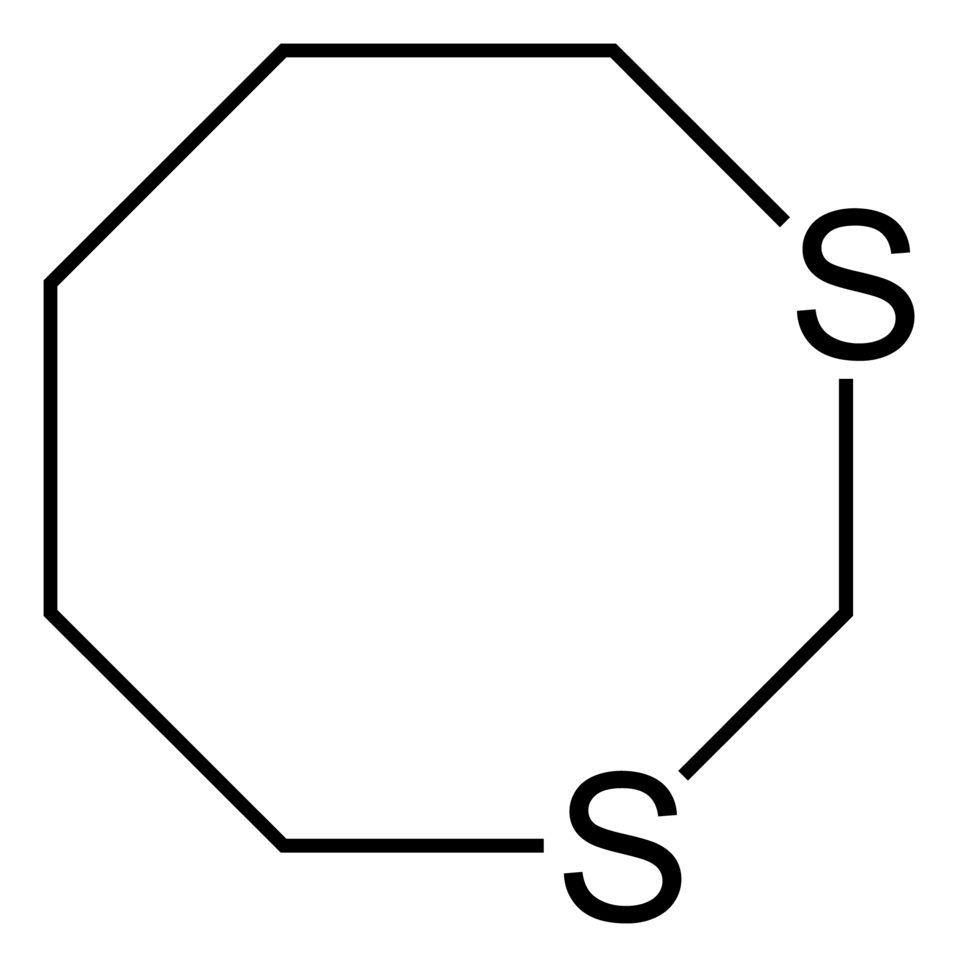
Skeletal formula of the 1,3-dithiocane molecule, C6H12S2.